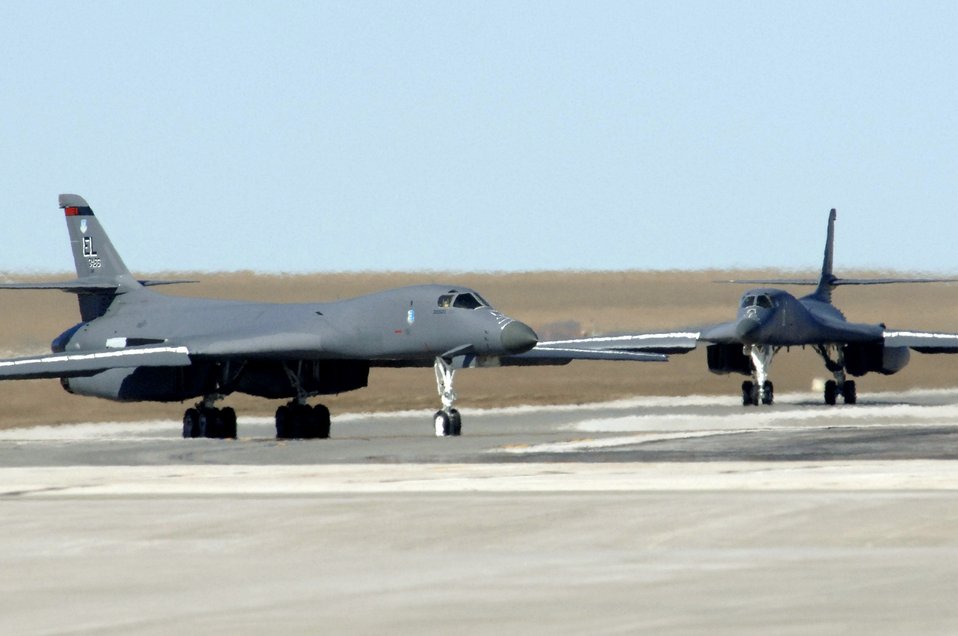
Fine-tuning the fleet

B-1B Lancers from the 34th Bomb Squadron taxi out to the Ellsworth Air Force Base, S.D., runway March 06 for an operational readiness exercise mission. Base officials are preparing for a scheduled operational readiness inspection later this year.